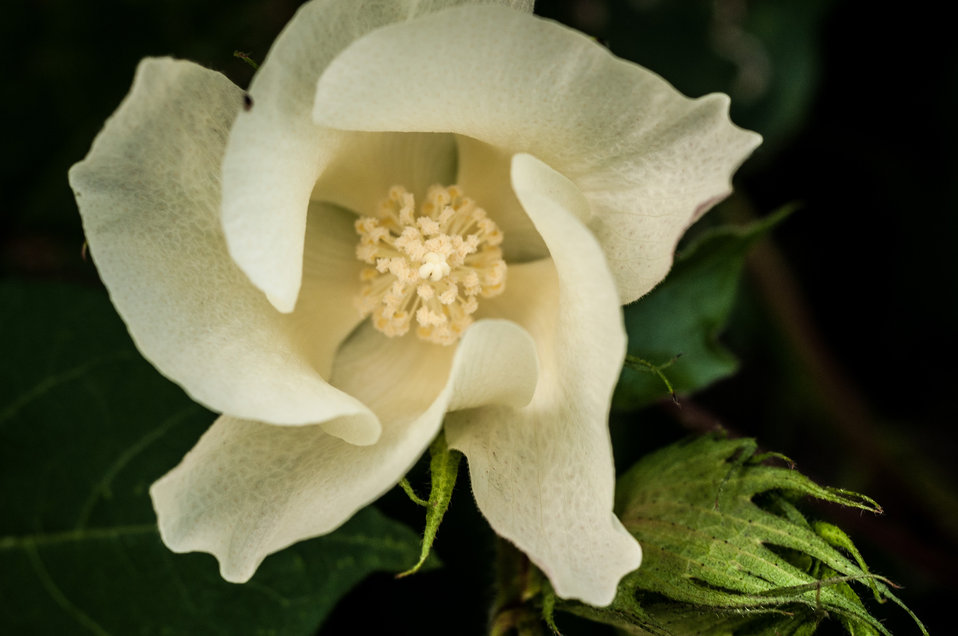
Michael Popp (pronounced Pope) shows cotton plants at various stages of development at Popp Farms 05 El Campo, TX on Jun. 20, 2013. Michael is a junior partner in the 2,400-acre operation, which grows cotton and milo (grain sorghum). The cotton flower starts as a square bud, then a white flower blossoms, turning red, then falls off leaving the boll to grow and eventually opens to reveal the cotton locks, ready to be harvested and processed in a cotton gin. Flowers first occur at the bottom and mature upwards along the plant. The farms are part of the United Agricultural Cooperative, Incorporated.